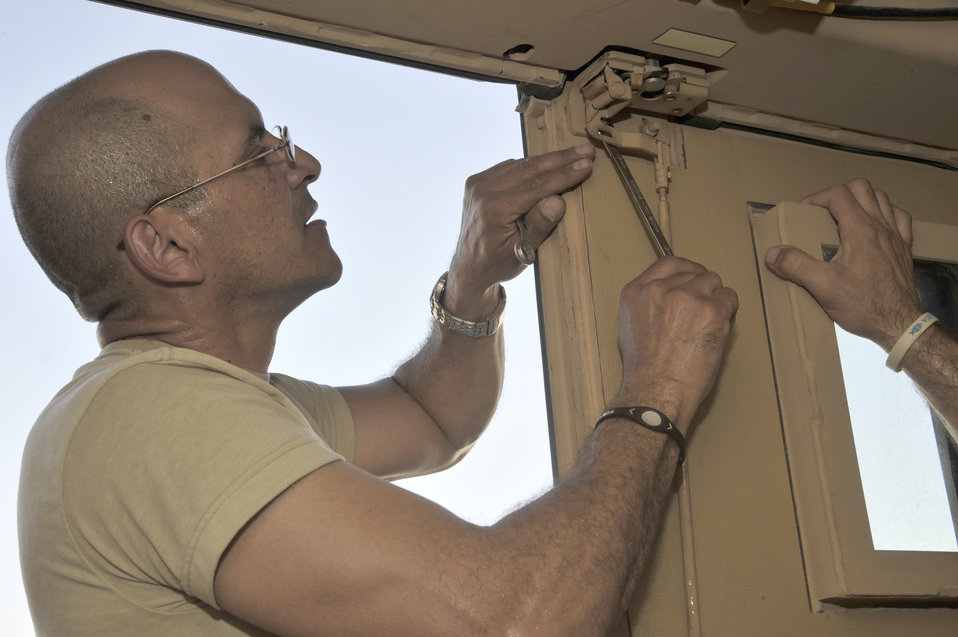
RPAT

Sgt. Feliz Rodriguez removes a broken latch from a Mine Resistant Ambush Protected vehicle Sept. 12, 2010, at Al Asad Air Base, Iraq. Sergeant Rodriguez is a member of the Redistribution Property Assistance Team, which inspects and loads military equipment to be sent back to the U.S, Afghanistan or given to Iraqi Security forces.